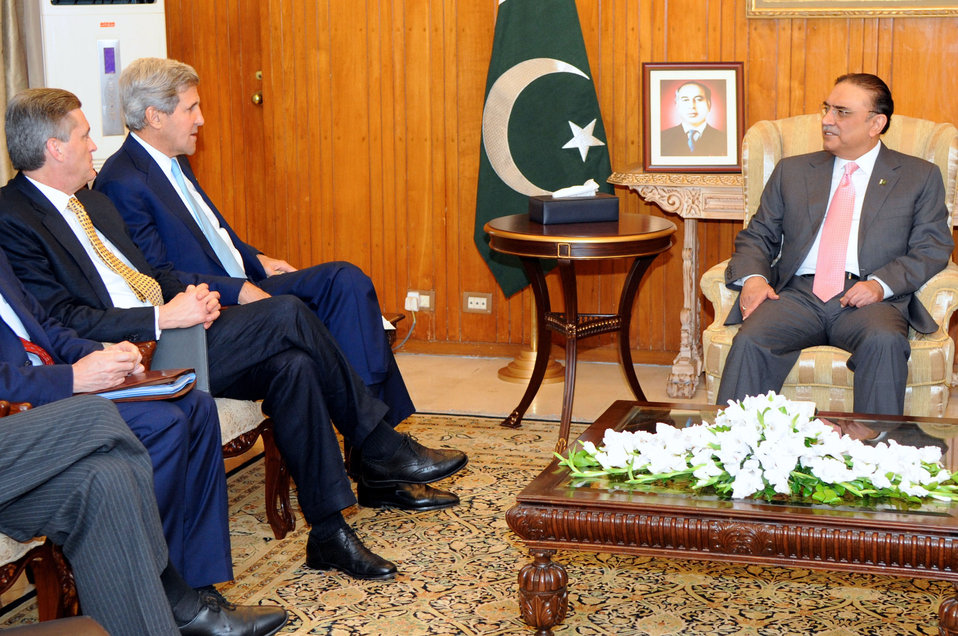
Secretary Kerry Meets With Pakistani President Zardari

U.S. Secretary of State John Kerry meets with Pakistani President Asif Ali Zardari during a visit to Islamabad, Pakistan, on August 1, 2013.